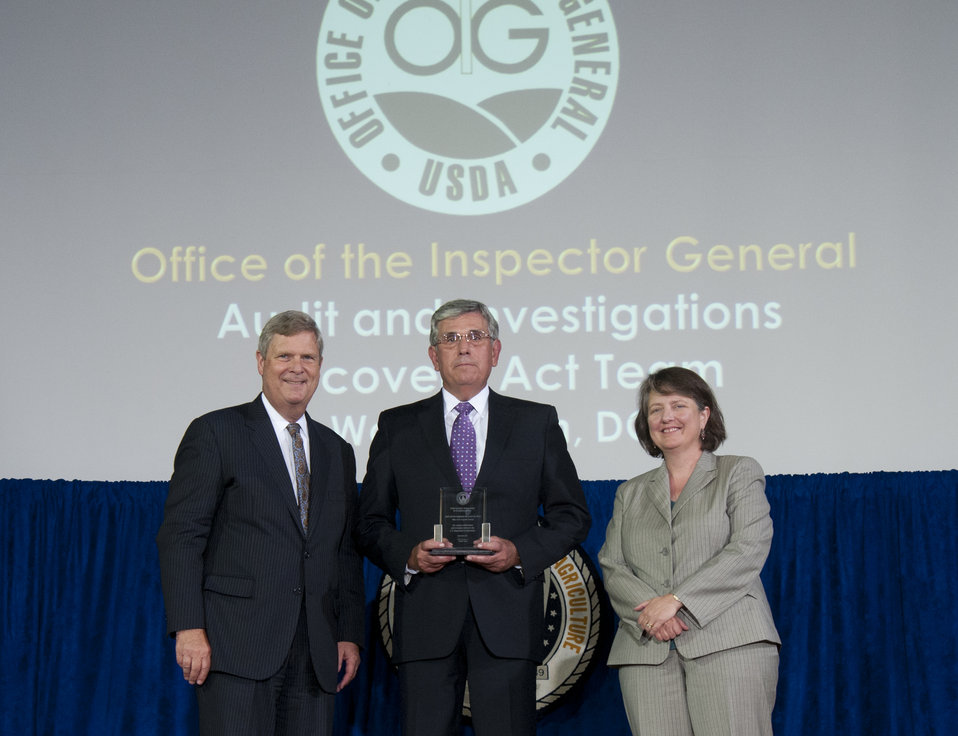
Agriculture Secretary Tom Vilsack and Agriculture Deputy Secretary Kathleen Merrigan present the Secretary’s Honor Award to Audit and Investigations Recovery Act Team Office of the Inspector General (OIG) group leader Robert Young at the U.S. Department of Agriculture (USDA) 64th Annual Honor Awards Ceremony in Washington, D.C. on Wednesday, Sept. 12, 2012. The Audit and Investigations Recovery Act Team’s received the award for their commitment, dedication and innovative spirit, which resulted in timely initiation of all Recovery Act oversight work and significant results for improving program delivery.